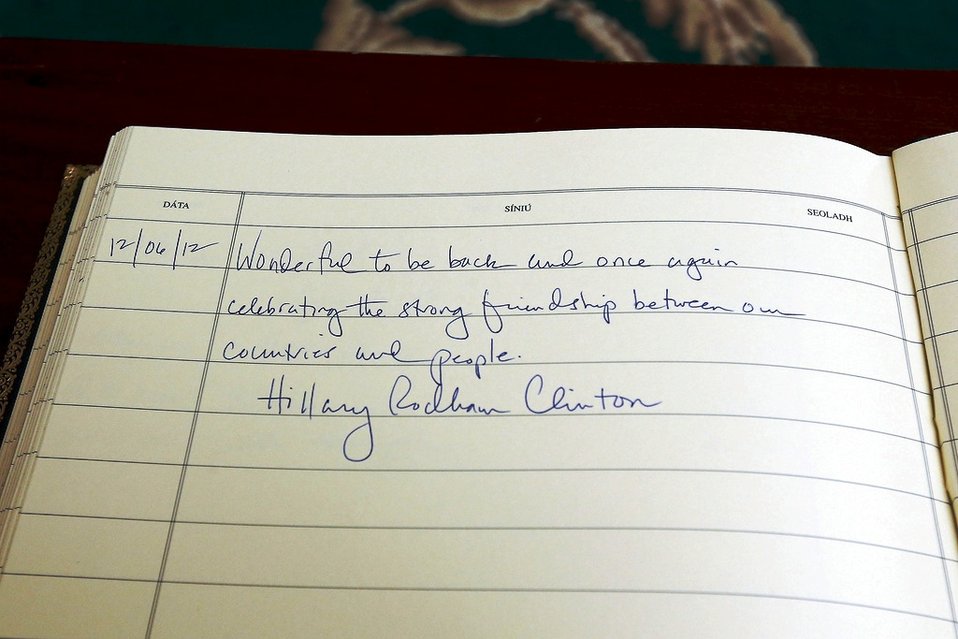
Secretary Clinton's Message for the Guestbook at Aras An Uachtarain

U.S. Secretary of State Hillary Rodham Clinton signs the guestbook at Aras An Uachtarain with Irish President Michael D. Higgins in Dublin, Ireland, December 6, 2012.